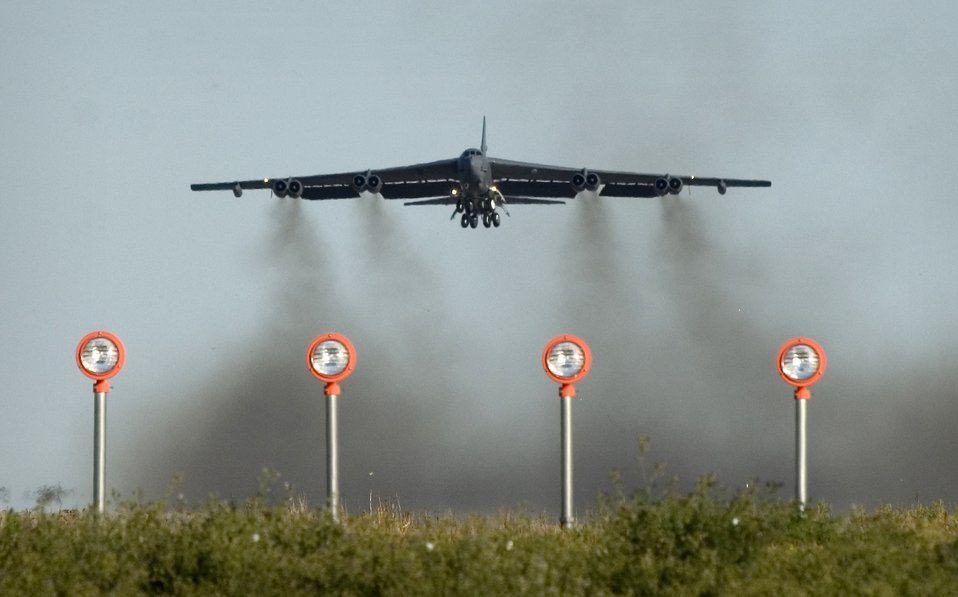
Air Force prepares to test synthetic fuel on B-52

A B-52 Stratofortress powered by a mix of synthetic and JP-8 fuel is slated to take its first flight Sept. 19 from Edwards Air Force Base, Calif., bringing the Air Force one step closer to reducing its dependence on foreign fuel. The B-52 shown is at Minot Air Force Base, N.D.